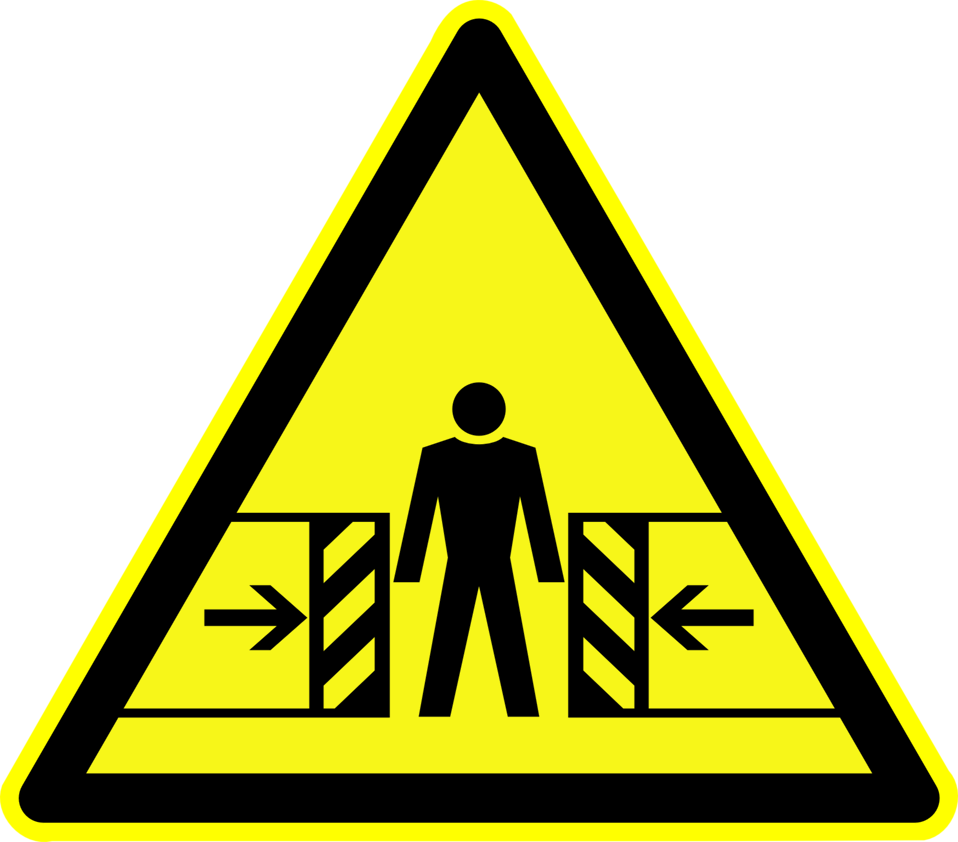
Deutsch: Warnung vor Quetschgefahr, Warnzeichen D-W023 nach DIN 4844-2 Risk of crushing, warning sign D-W023 according to German standard DIN 4844-2